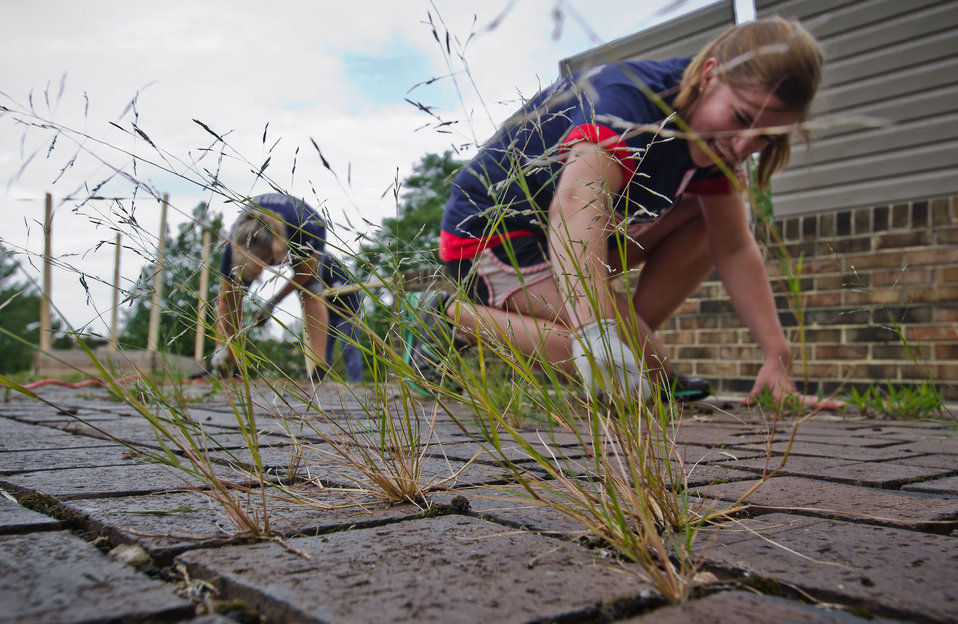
U.S. Department of Agriculture's (USDA) Emily Orler removing weeds in a walkway, during People’s Garden Executive Master Gardeners, friends, and family, along with Washington Capitals fans volunteer effort with the District of Columbia Public Schools’ (DCPS) Beautification Day, on Saturday, August 25, 2012, at Thurgood Marshall Elementary School, in Washington, D.C. Each year people are invited to help “spruce up” public school facilities in preparation for the first day of school. More than 70 volunteers pitched in at this large school facility. The People’s Garden effort involves building and painting raised planter boxes, then preparing the soil mixture so they are “ready for planting.” Additionally, a team that includes descendants of U.S. Supreme Court Justice Thurgood Marshall assembles a prefabricated garden toolshed. The Justice’s son, John Marshall leads the team, which includes Brianna the Justice’s great-grand daughter in one of many multi-generational efforts at this school today. Washington Capitals Forward Mike Riberio, his family and mascot Slapshot participated in every project underway at Marshall School. From the outside gardens, to inside murals, and robotics worktable construction, the teams made their goals.